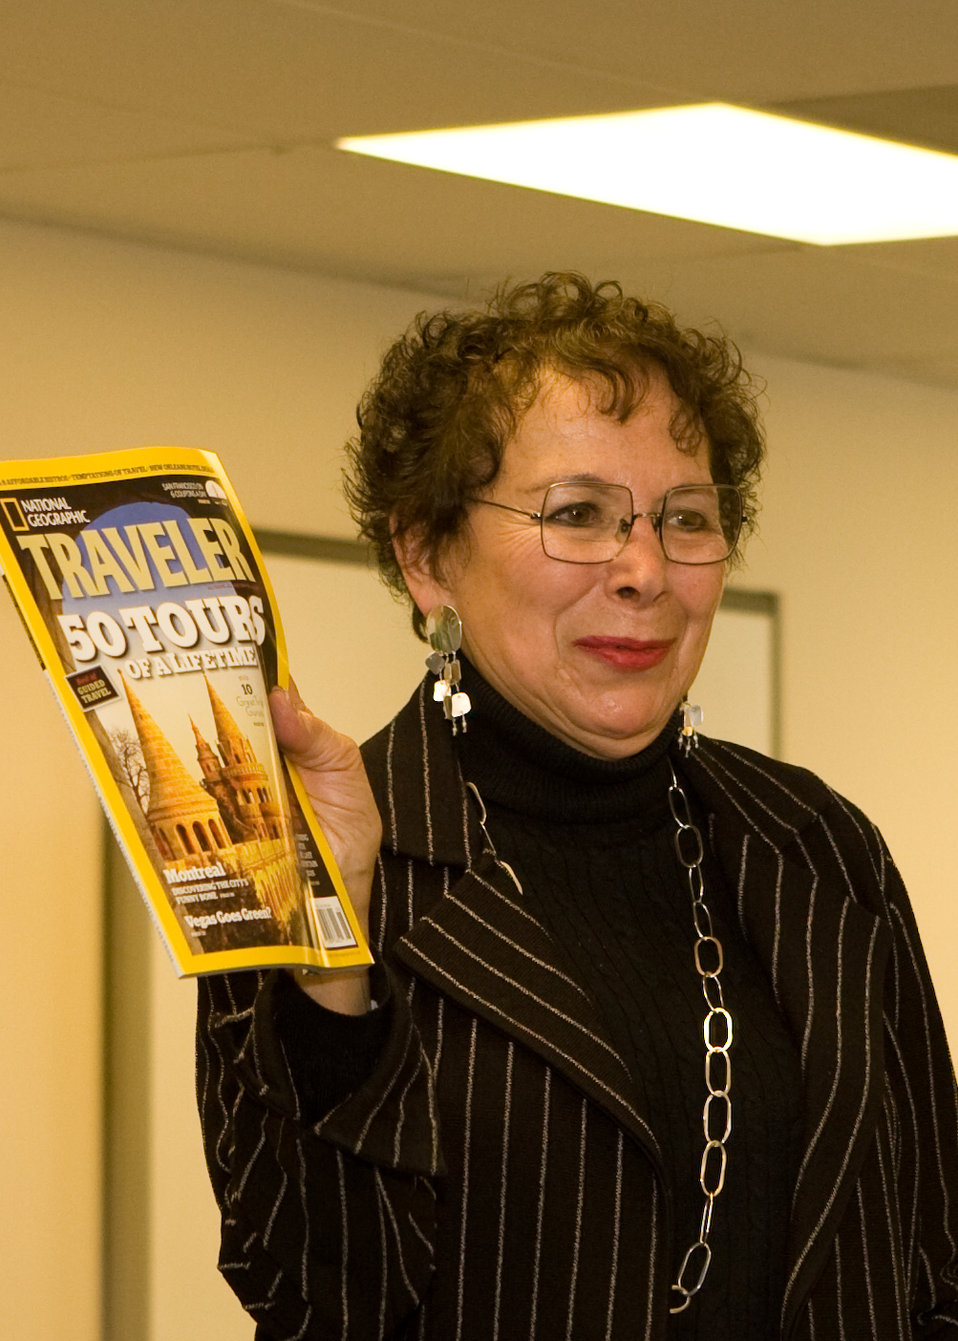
Margot Zallen Will Now Have More Time to Vacation in her Retirement

On May 23rd, 2011 The U.S. Fish and Wildlife Service Mountain-Prairie Region honored three of the most influential individuals in wolf recovery in the Northern Rocky Mountains: Ed Bangs, Steve Fritts, and Margot Zallen. Ed Bangs started the event with an hour-long presentation, “Wolf Conservation: The Good, The Bad, and The Ugly.”

Following the presentation, Regional and National leadership recognized the imminent retirement of Ed, Steve, and Margot with a variety awards for their contributions.